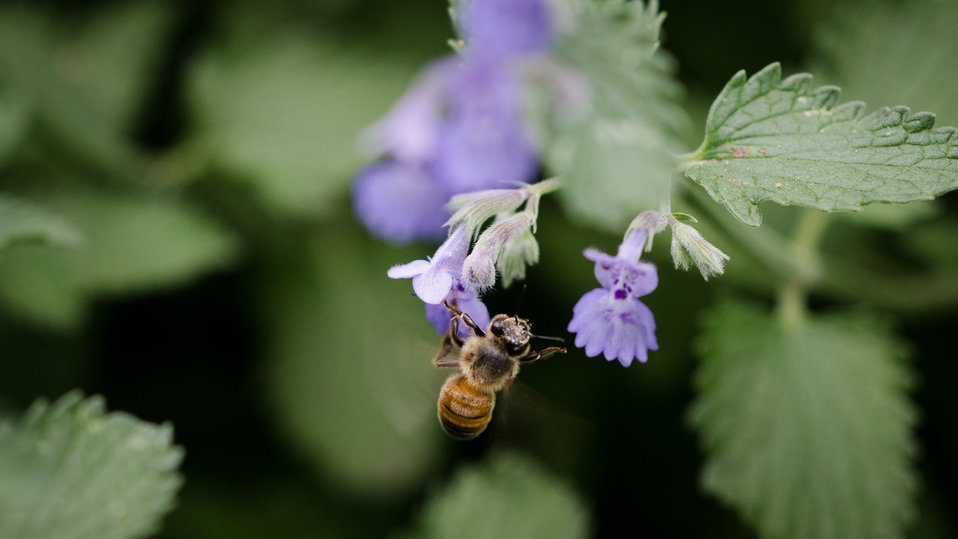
A honey bee is attracted to flowers in the U.S. Department of Agriculture People's Garden, outside the headquarters' Whitten Building in Washington, D.C., on Tuesday, May 21, 2013.This flower attracts bees because it provides nectar for the hive to feed on. Other plant in the garden have pollen that other bees will feed on. The bees gather pollen from many flowers and aide in pollination by moving from plant to plant.